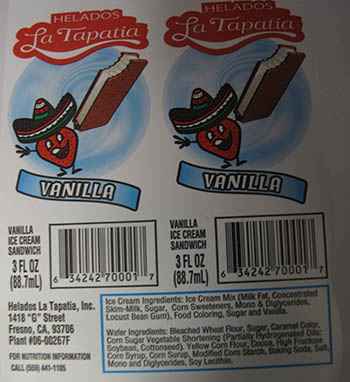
RECALLED – Ice cream products

March 19, 2014 – Product Recall – Helados La Tapatia, Inc. Recalls Products Because of Possible Health Risk.